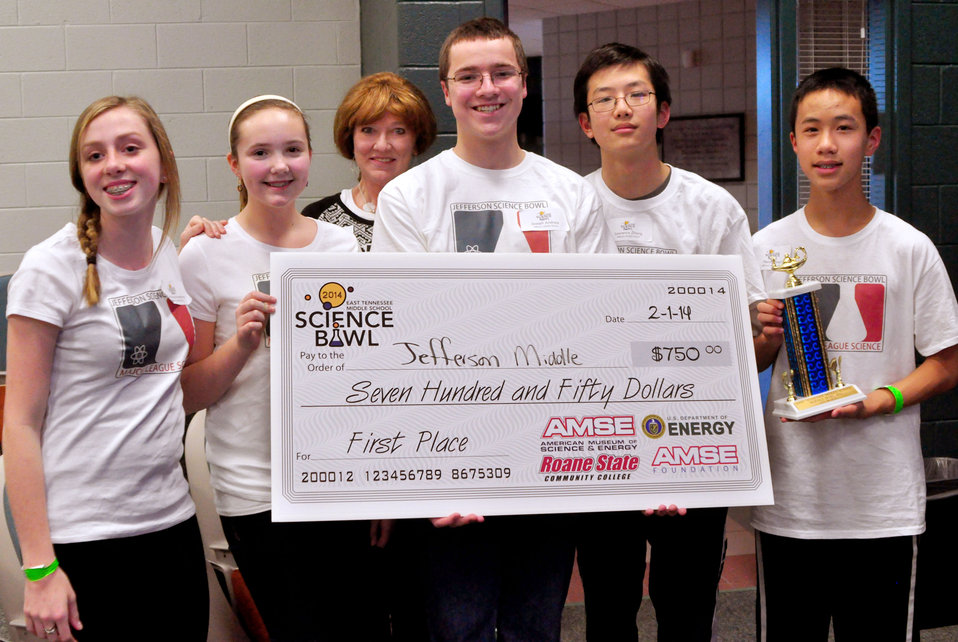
Jefferson Middle First Place DOE Middle School Science Bowl

14-017 DOE photo Lynn Freeny 2-1-2014 Oak Ridge Tennessee